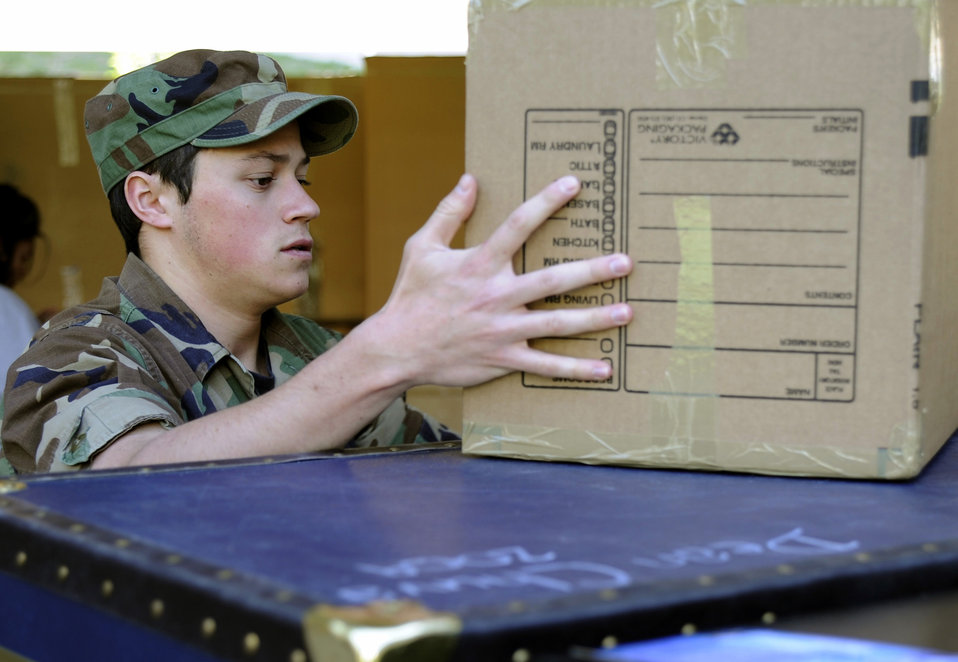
Move out!

Senior Cadet Dean Chuva, a member of the graduating class of 2009, moves his baggage to a staging area near Sijan Hall at the Air Force Academy in Colorado. As graduation nears, many preparations must be done before being commissioned as a new lieutenant and entering active duty.